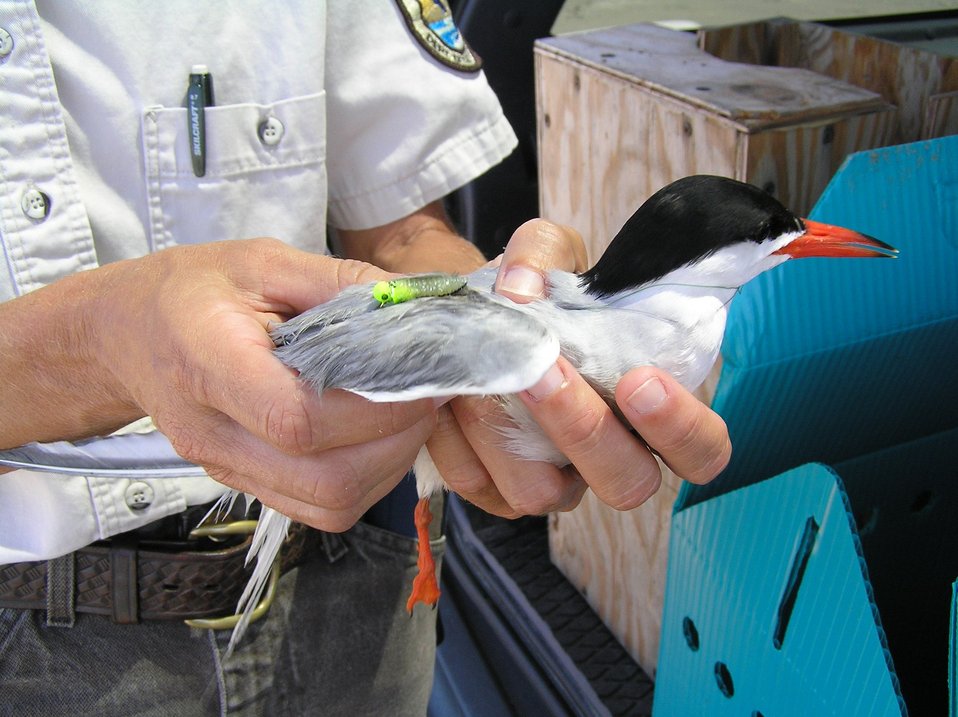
Common tern with fishing lure

Eastern Shore of Virginia Refuge.